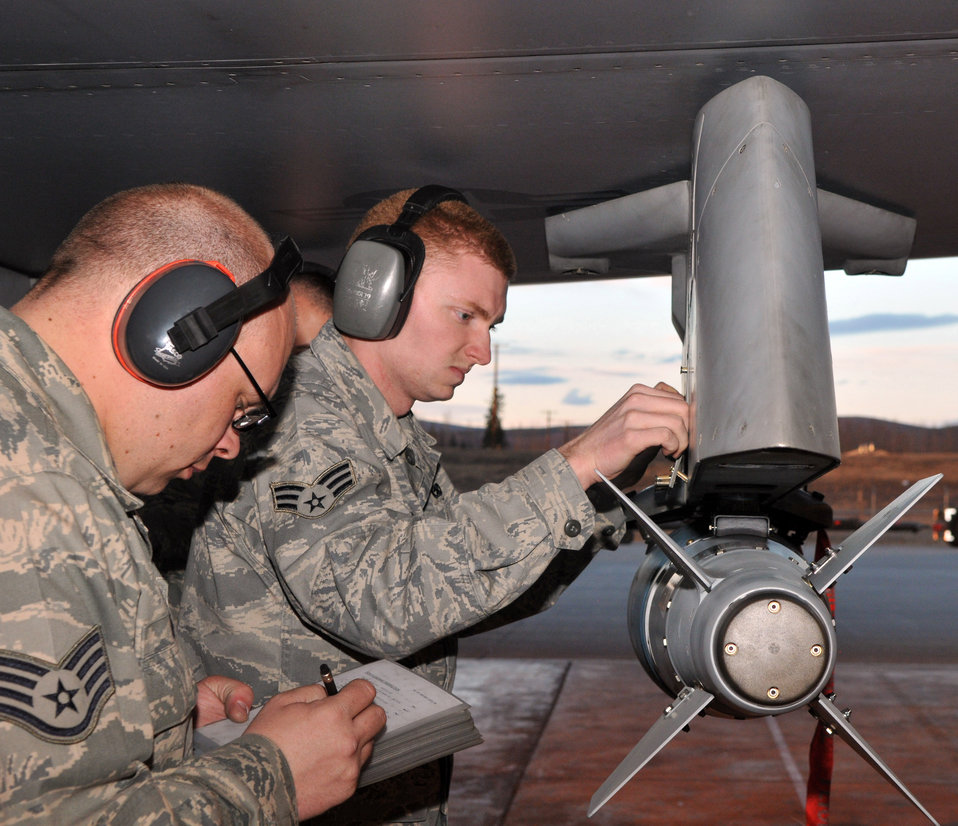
Kunsan Airmen arm F-16s during Red Flag-Alaska

Staff Sgt. Adam Hatch (left) reviews a technical order checklist while Senior Airman Troy Bledsoe secures an inert Joint Direct Attack Munition GBU-38 to an F-16 Fighting Falcon during Red Flag-Alaska April 19, 2010, at Eielson Air Force Base, Alaska. Sergeant Hatch is weapons load crew chief and Airman Bledsoe is weapons load crew member deployed from the 8th Fighter Wing at Kunsan Air Base, South Korea.